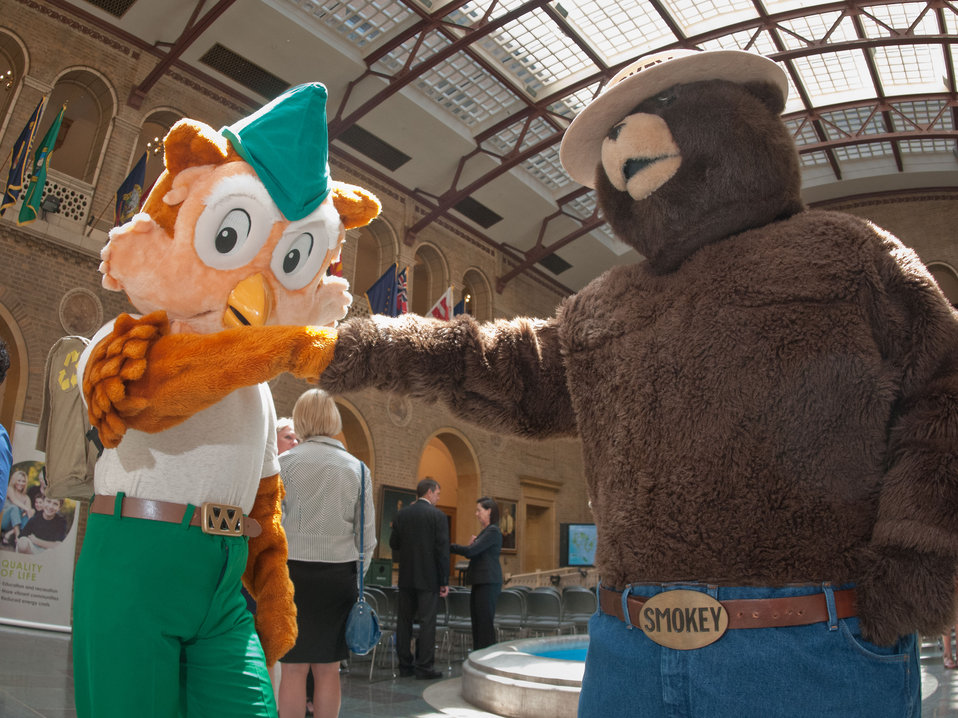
Woodsy Owl (left) and Smokey Bear give each other a fist bump at the International Year of Forests (IYOF) celebration for U.S. Department of Agriculture employees, on Friday, June 3, 2011 in the Patio of the Whitten Building, Washington, DC.